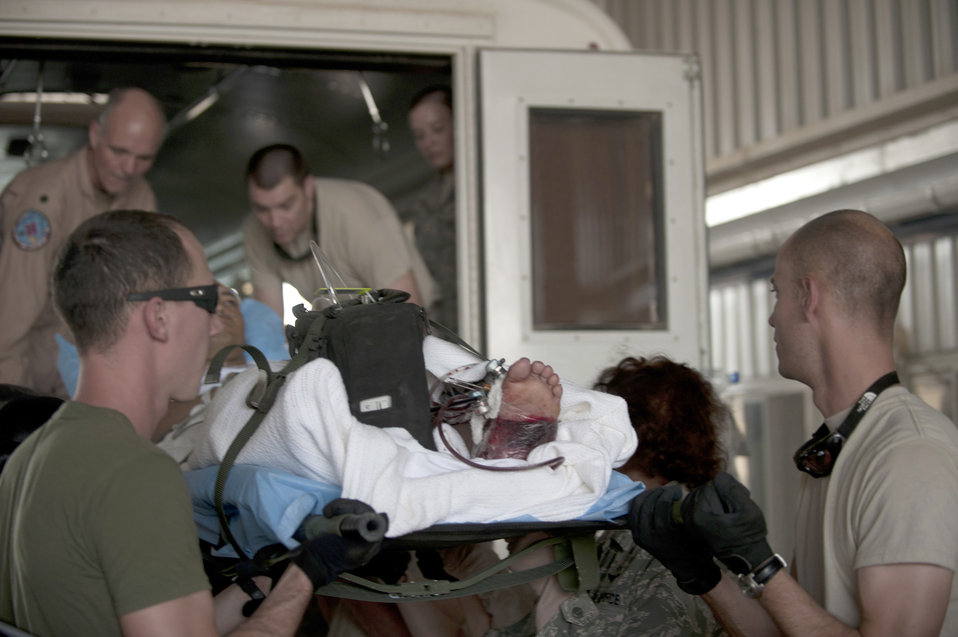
Transporting the wounded

Members of the 451st Expeditionary Aeromedical Evacuation Squadron load a wounded Marine onto an ambulance May 21, 2011, at Camp Bastion, Afghanistan.